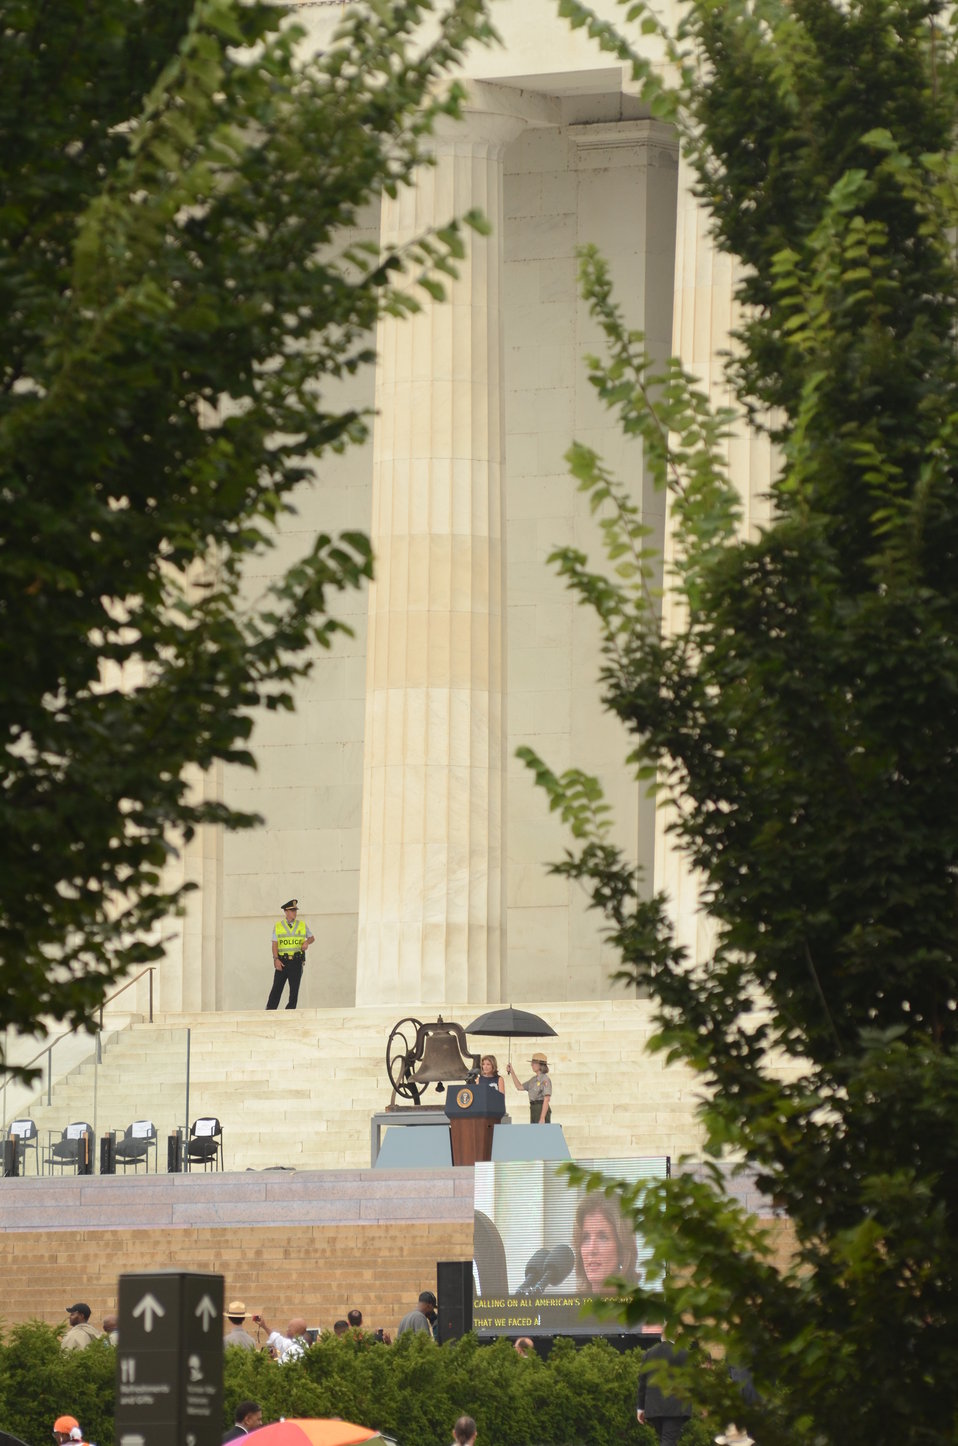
Caroline Kennedy speaking at the Lincoln Memorial for the March on Washington, D.C., on Wed., Aug. 28, 2013.